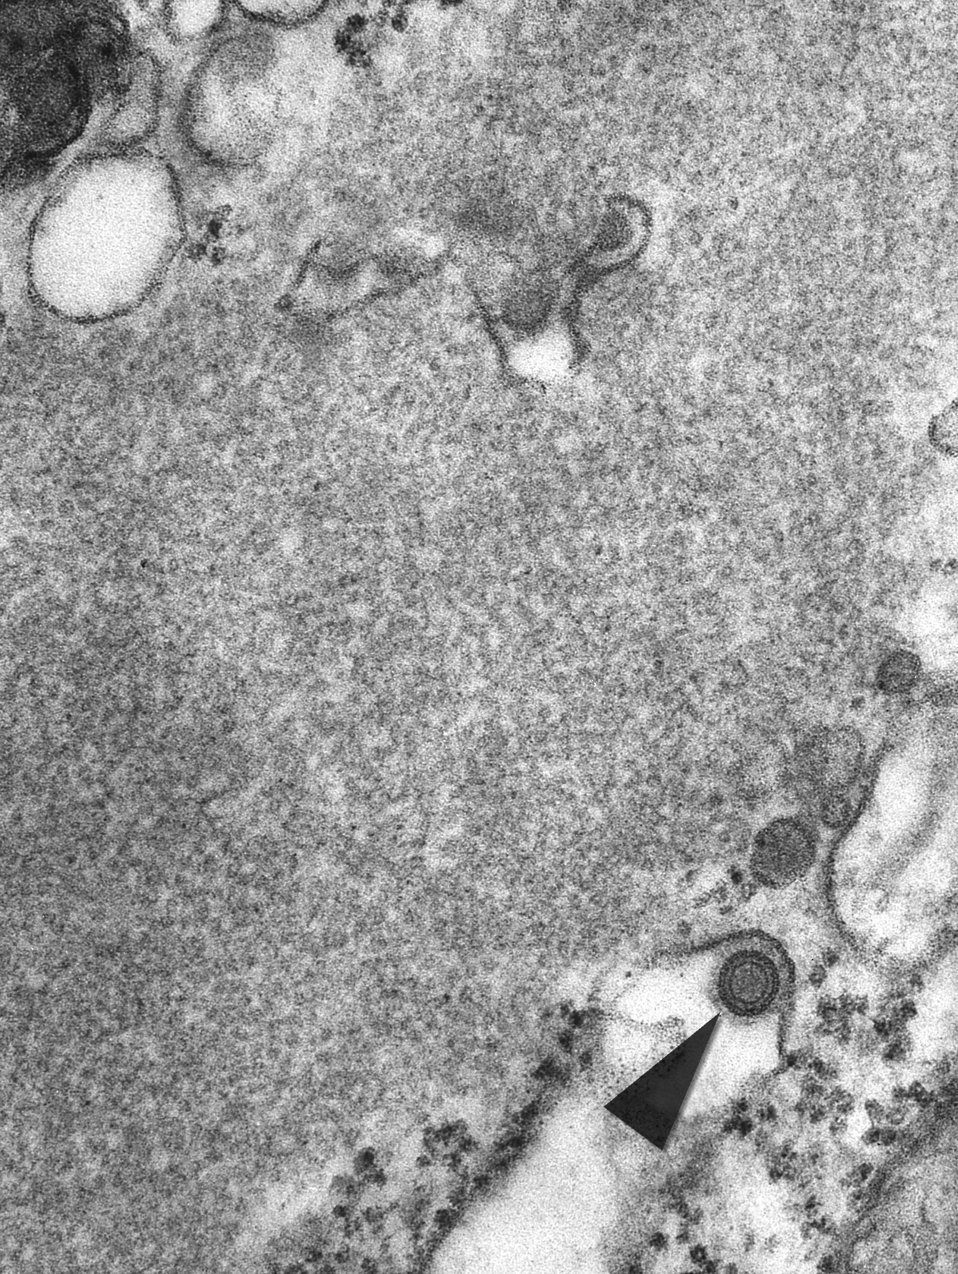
This transmission electron micrograph (TEM) revealed some of the internal cross-sectional structural morphology of a rabies virion (arrow) in this central nervous system tissue specimen. The virion is adjacent to a Negri body, which is pathognomonic in the positive diagnosis for Rabies. The virus infects the central nervous system, causing encephalopathy and ultimately death. Rabies virus belongs to the order Mononegavirales, viruses with a nonsegmented, negative-sense single-stranded RNA ((-) ssRNA) genomes. Within this group, viruses with a distinct "bullet" shape are classified in the Rhabdoviridae family, which includes at least three genera of animal viruses, Lyssavirus, Ephemerovirus, and Vesiculovirus. The genus Lyssavirus includes rabies virus, Lagos bat, Mokola virus, Duvenhage virus, European bat virus 1 & 2 and Australian bat virus.